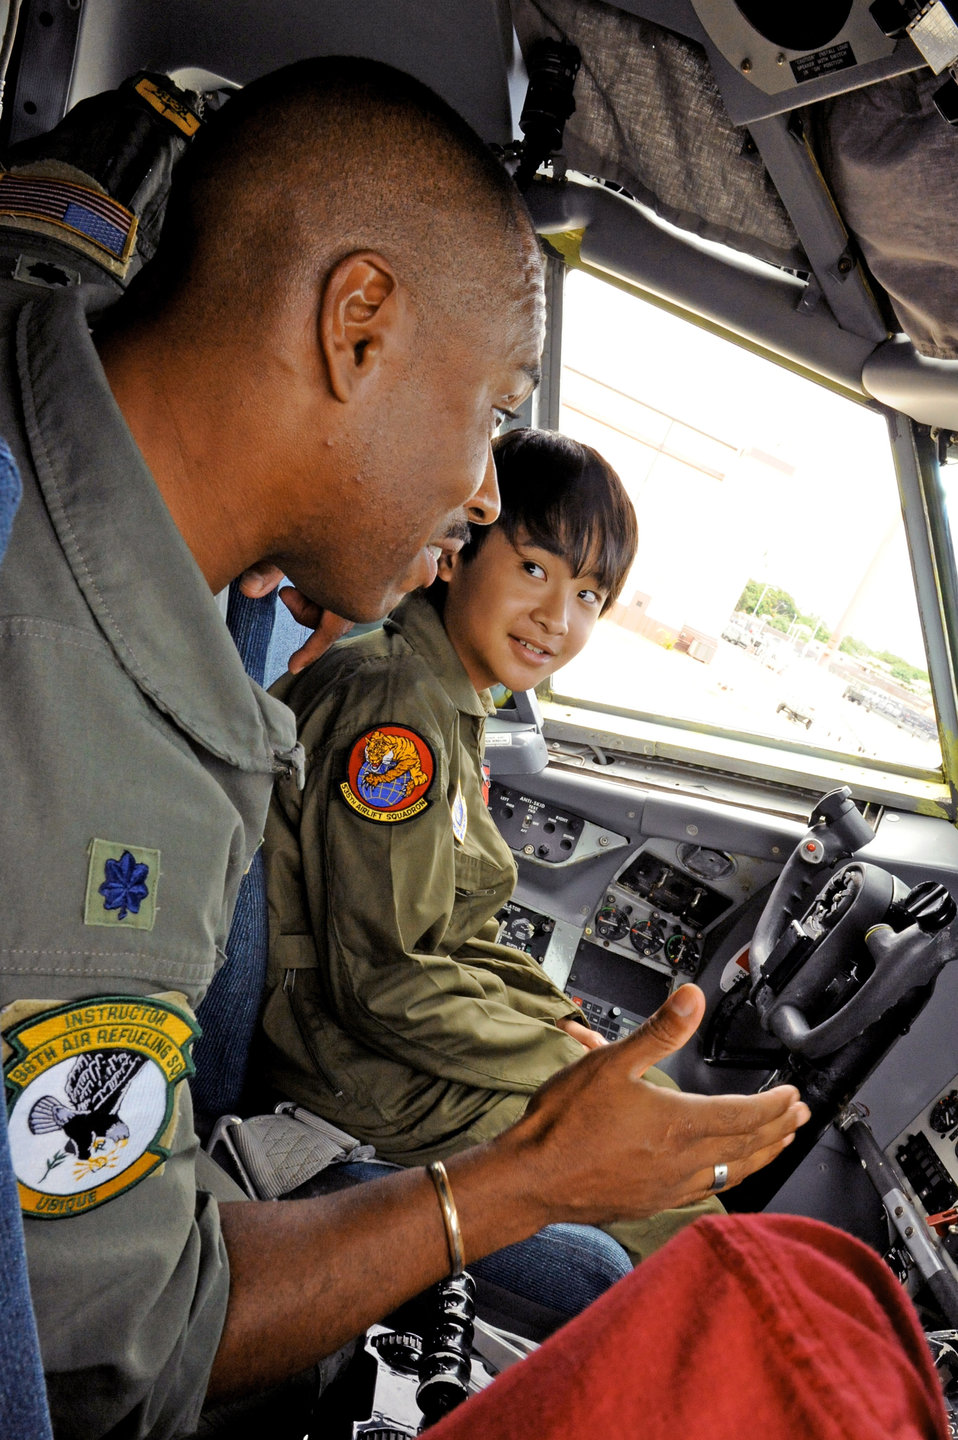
11-year old becomes a pilot

Lt. Col. Eric Brumskill explains the workings of a KC-135 Stratotanker Oct. 29, 2010, on the flightline at Joint Base Pearl Harbor-Hickam, Hawaii. Ryder was part of the 535th Airlift Squadron's quarterly Pilot for a Day program, which allows children with catastrophic disorders or illnesses to experience a day in the life of an Air Force pilot. Colonel Brumskill is the 96th Air Refueling Squadron chief pilot.